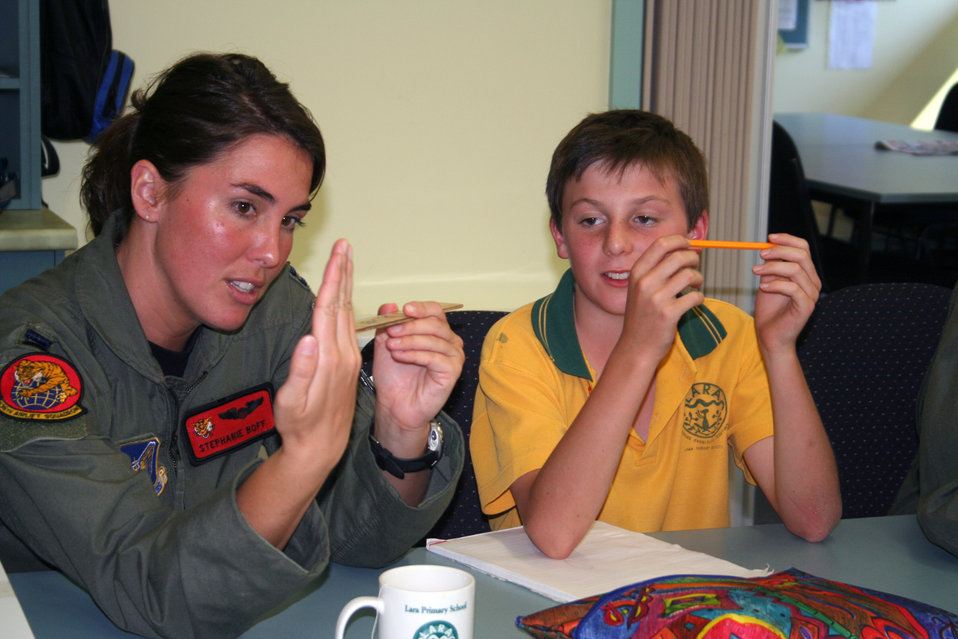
Airmen visit Australian primary school

Capt. Stephanie Boff explains the aerodynamics of an airplane wing to Lara Primary School sixth-grader Michael French. Michael and three other students are working on a model airplane project for their school. Captain Boff and other Pacific Air Forces Airmen visited the school in Victoria, Australia, March 22 to speak to students about being in the Air Force. The Airmen are in Australia supporting Australian International Airshow 2007. Captain Boff is a pilot with the 535th Airlift Squadron at Hickam Air Force Base, Hawaii.